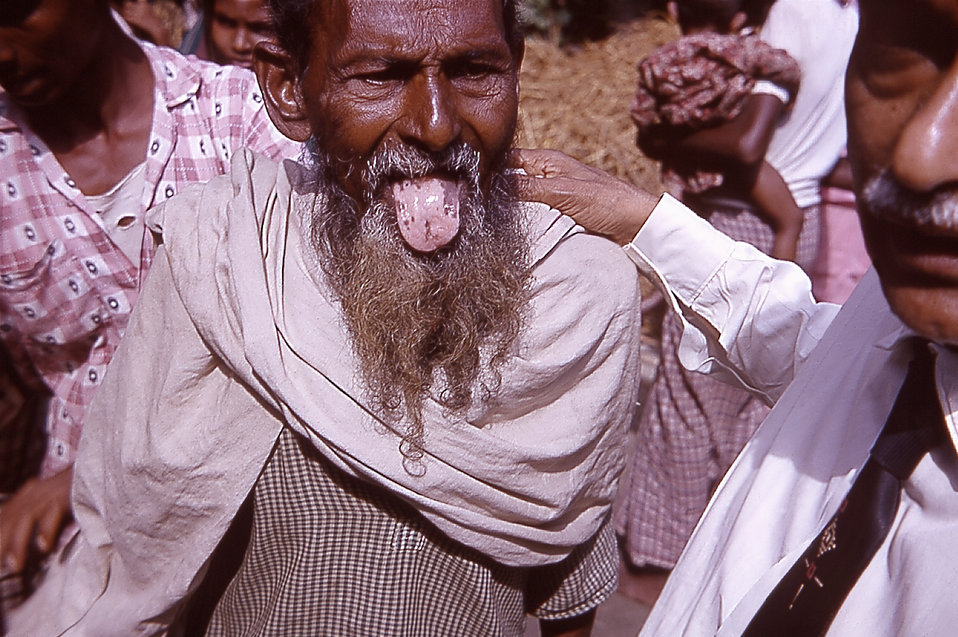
The elderly man in this 1964 photo taken in East Pakistan, which became Bangladesh after 1971, is suffering from anemia.